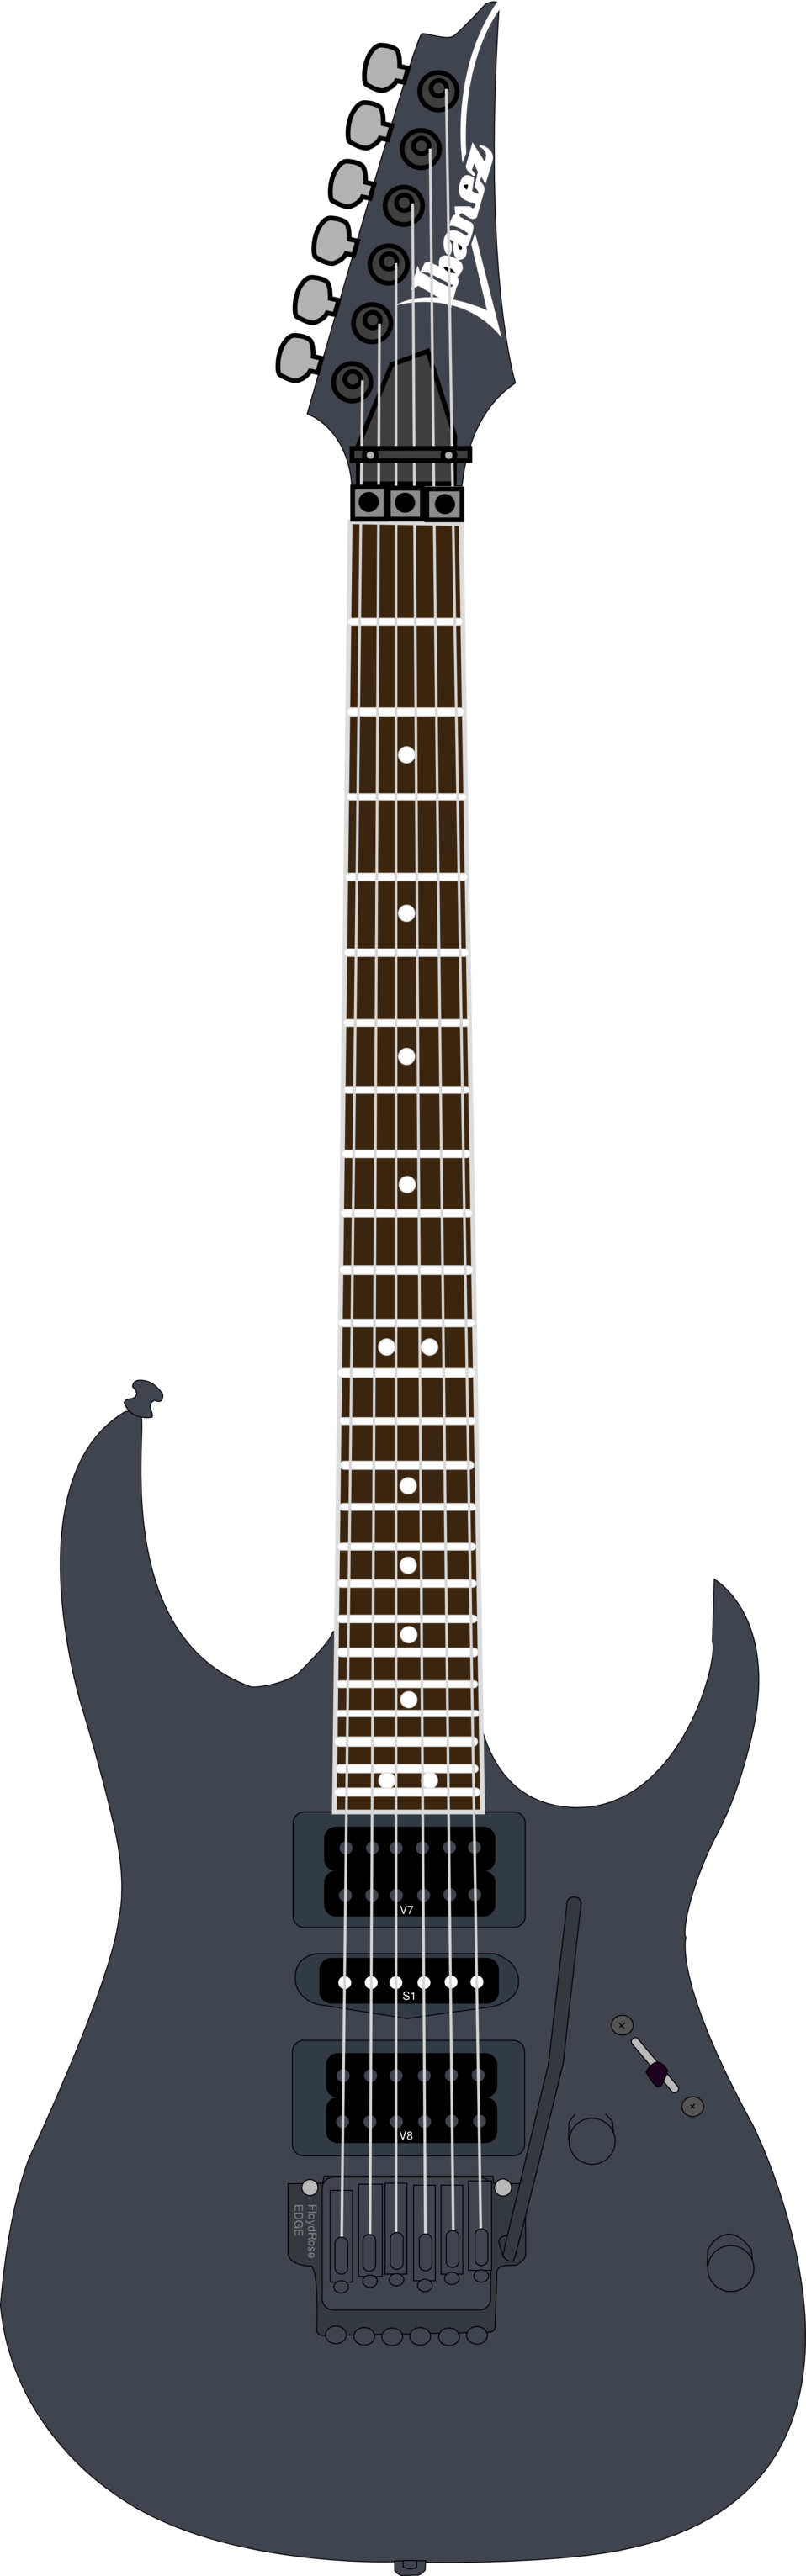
Generic Ibanez RG Guitar